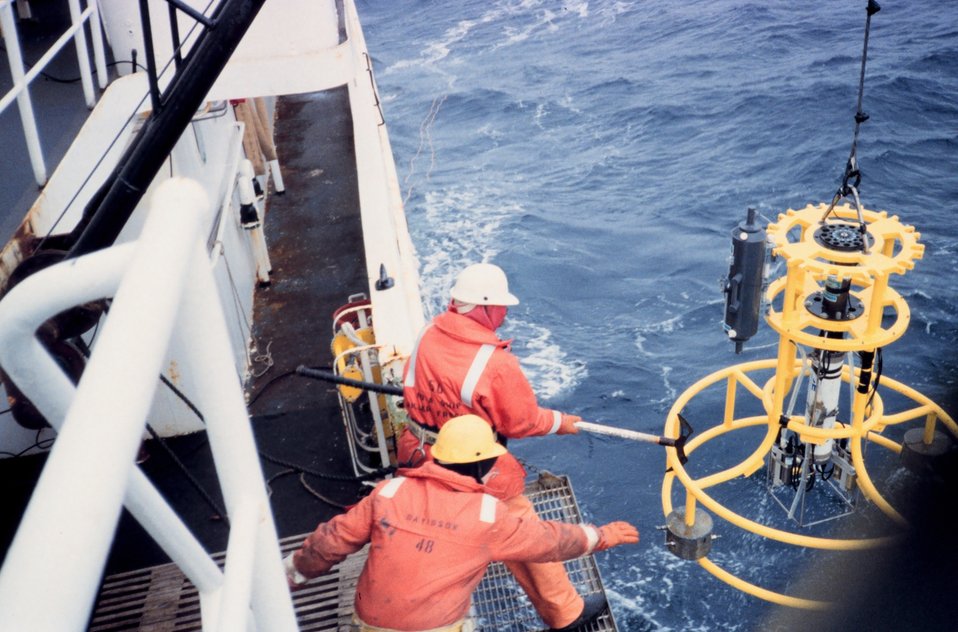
Conductivity-Temperature-Depth measuring instrument for studying characteristics of water column.